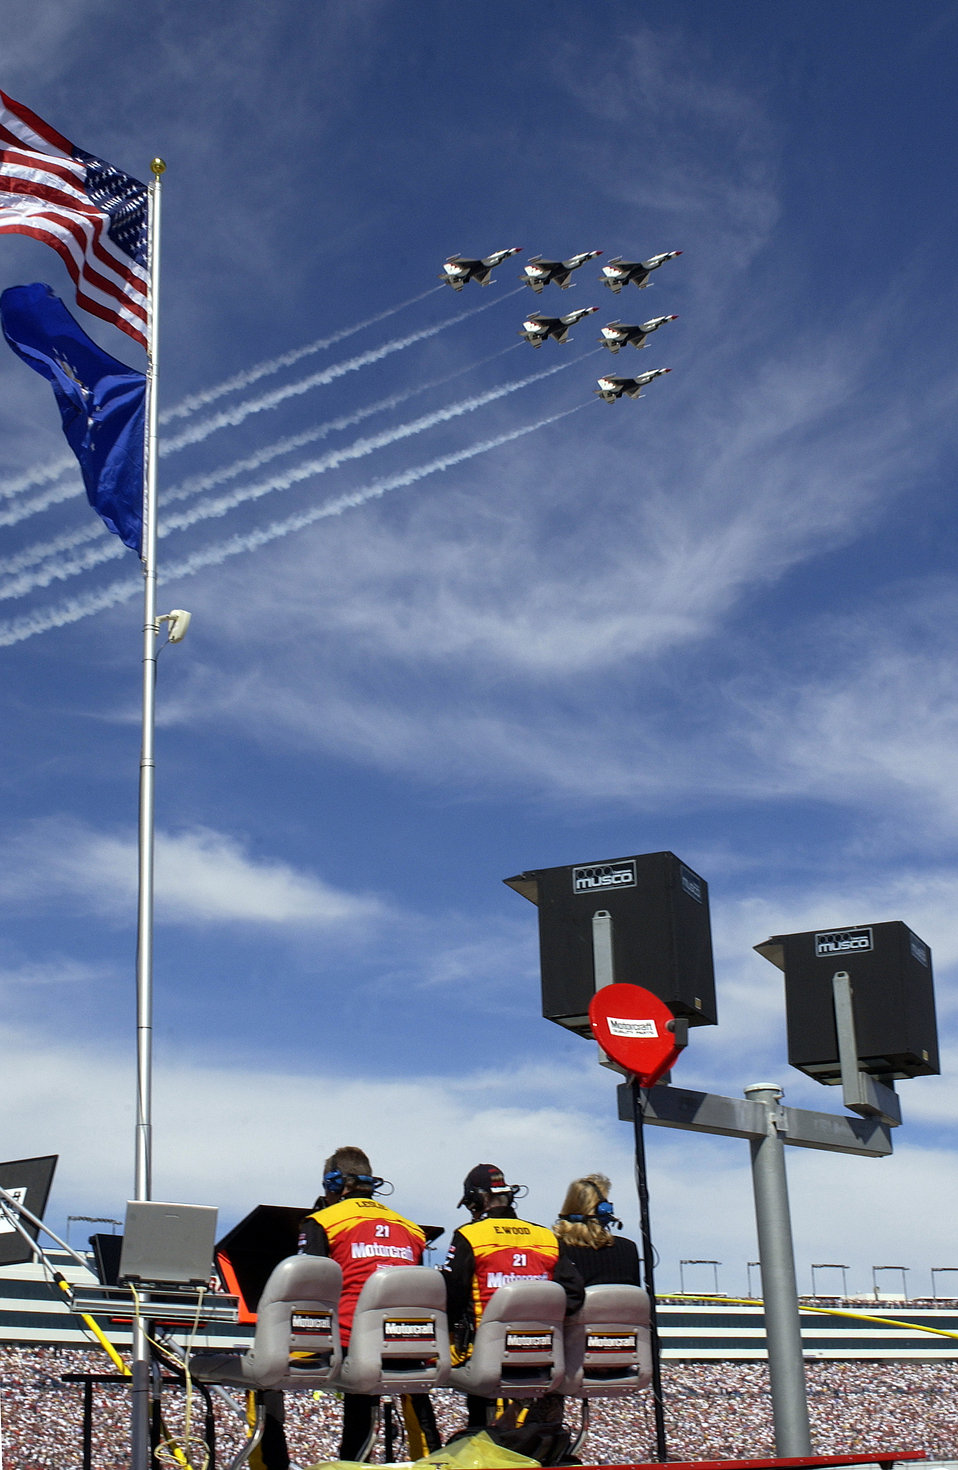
Racing through the skies

LAS VEGAS -- The No. 21 Motorcraft Air Force NASCAR team watches as the U.S. Air Force Thunderbirds fly over the Las Vegas Motor Speedway on March 7 to start the 2004 UAW Daimler Chrysler 400 Nextel Cup Race.